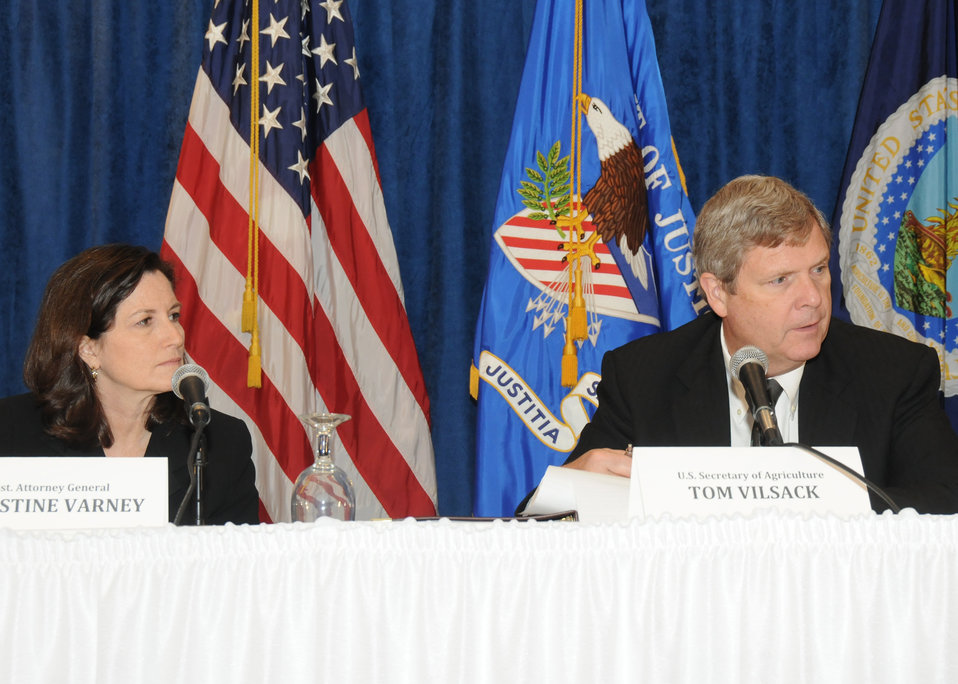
U. S. Department of Justice and the U.S. Department of Agriculture hold a listening session on “Agriculture and Antitrust Enforcement Issues in Our 21st Century Economy “ with poultry farmers at Alabama A & M University in Normal, AL, on Friday, May 21, 2010. The late morning listening session had a panel consisting of nearby poultry farmers. Assistant Attorney General for Antitrust Christine Varney (left) and Agriculture Secretary Tom Vilsack listen closely to the poultry farmers' concerns. USDA photo 10di1361-308